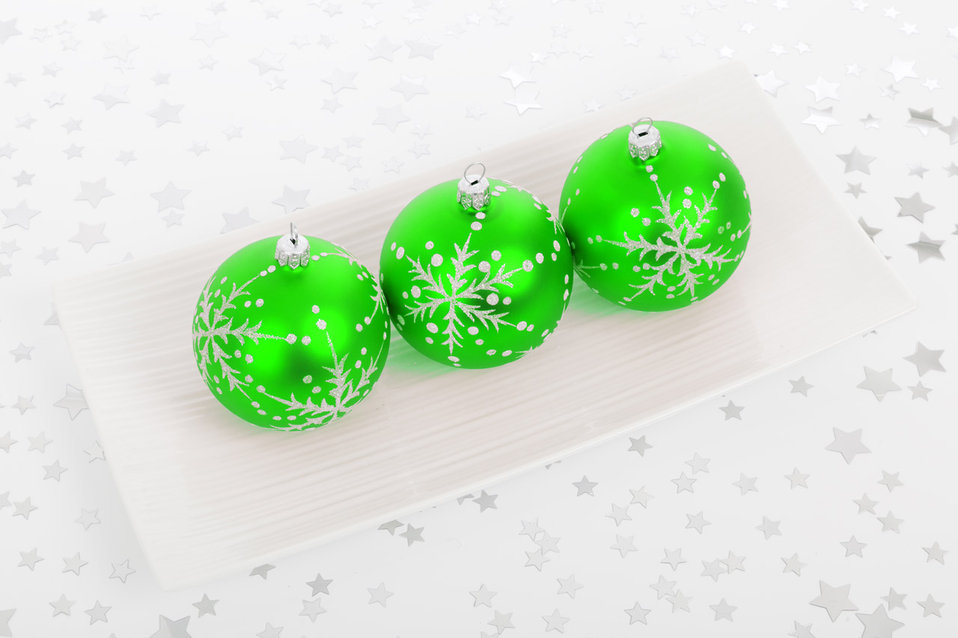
Green bauble decorations

Three green baubles on the plate with stars on the background.